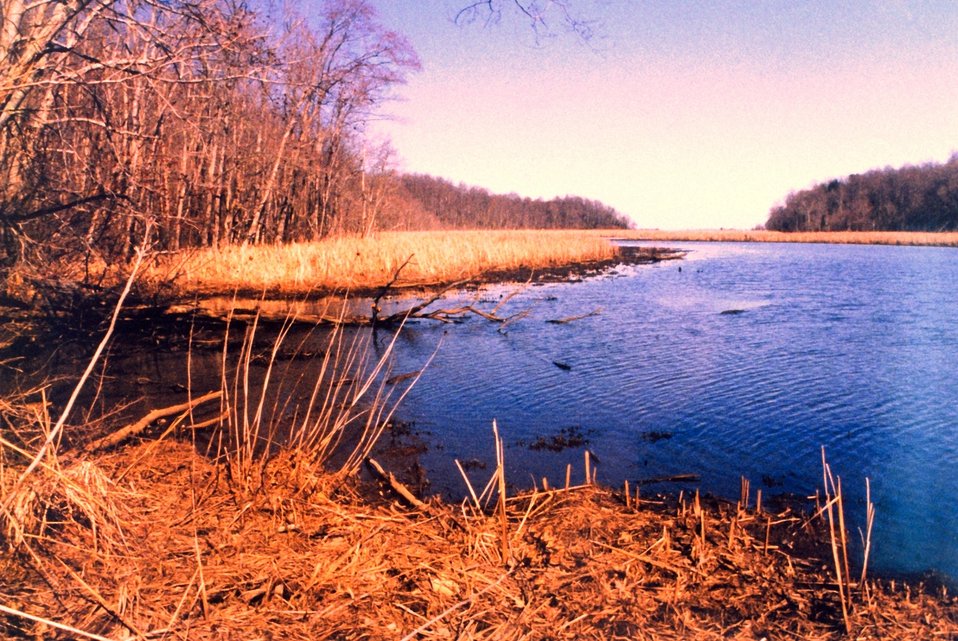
Parkers Creek, off Chesapeake Bay, in the American Chestnut Land Trust Area.